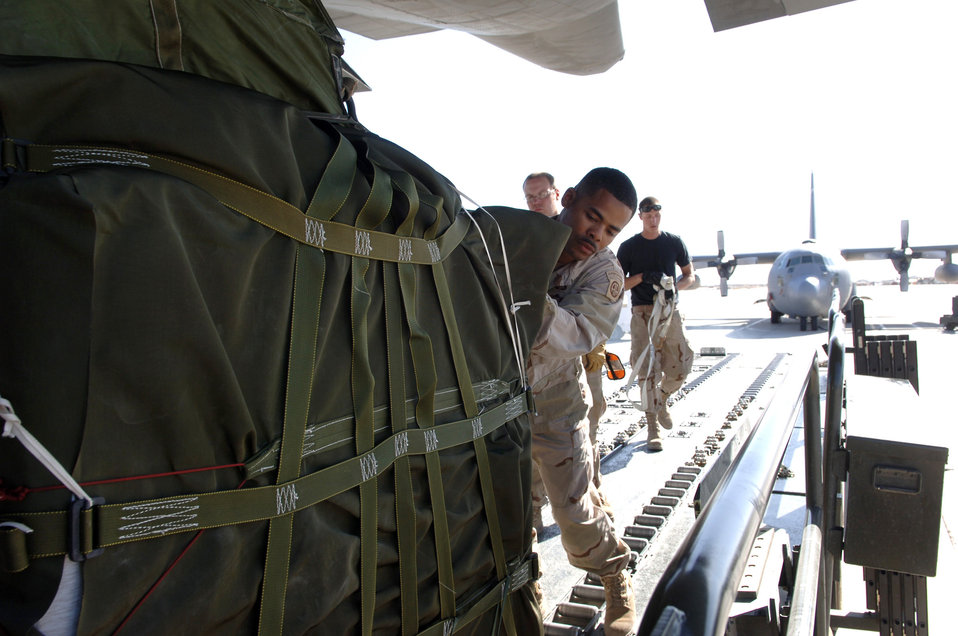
Operation Enduring Freedom

BAGRAM AIR BASE, Afghanistan - Army Sgt. Lamarr Haines, an 82nd Airborne Division parachute rigger, helps load a C-130 Hercules from the 517th Airlift Squadron with relief supplies destined for Pakistan. Troops loaded 14 pallets for the drop. Soldiers and Airmen here assemble approximately 20,000 pounds of food, blankets, and supplies for the drop. To date, more than 180,000 pounds of food, water, cots and medical supplies have been flown out of Bagram headed for Pakistan.